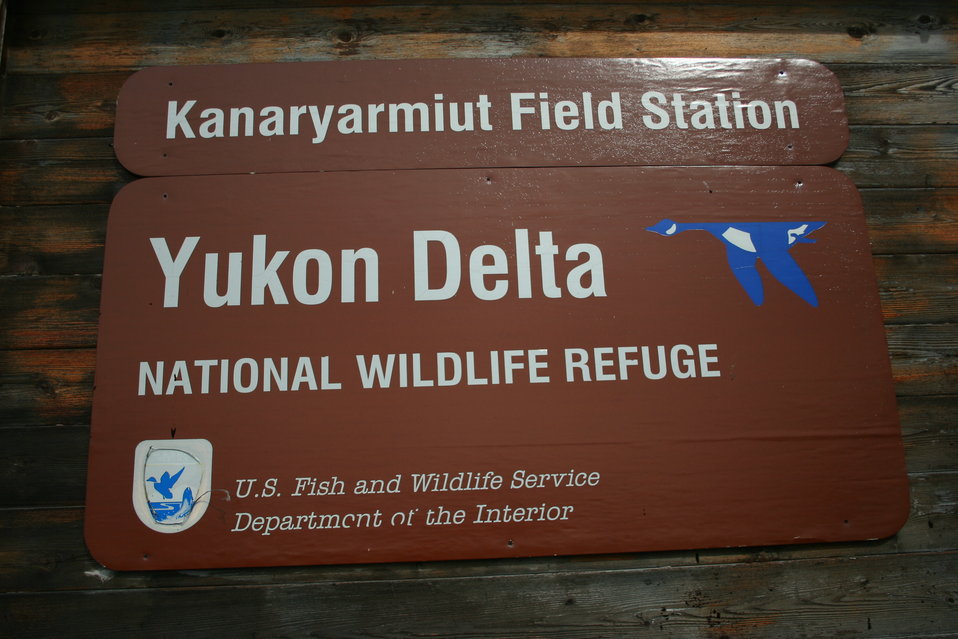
Welcome to Kanaryarmiut Field Station

This field station used for many different research projects on the Delta.

USFWS Yukon Delta NWR